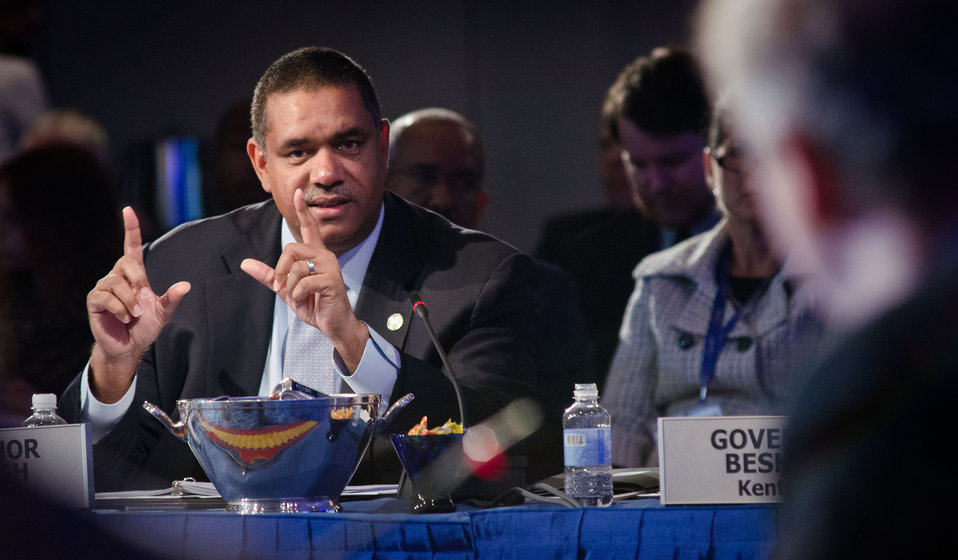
Virgin Island - Governor John P. de Jongh, Jr. (left) poses a question to Agriculture Secretary Tom Vilsack (right), a guest speaker at the National Governors Association Education, Early Childhood and Workforce Committee meeting in Washington, D.C., on Sunday, February 26, 2012.